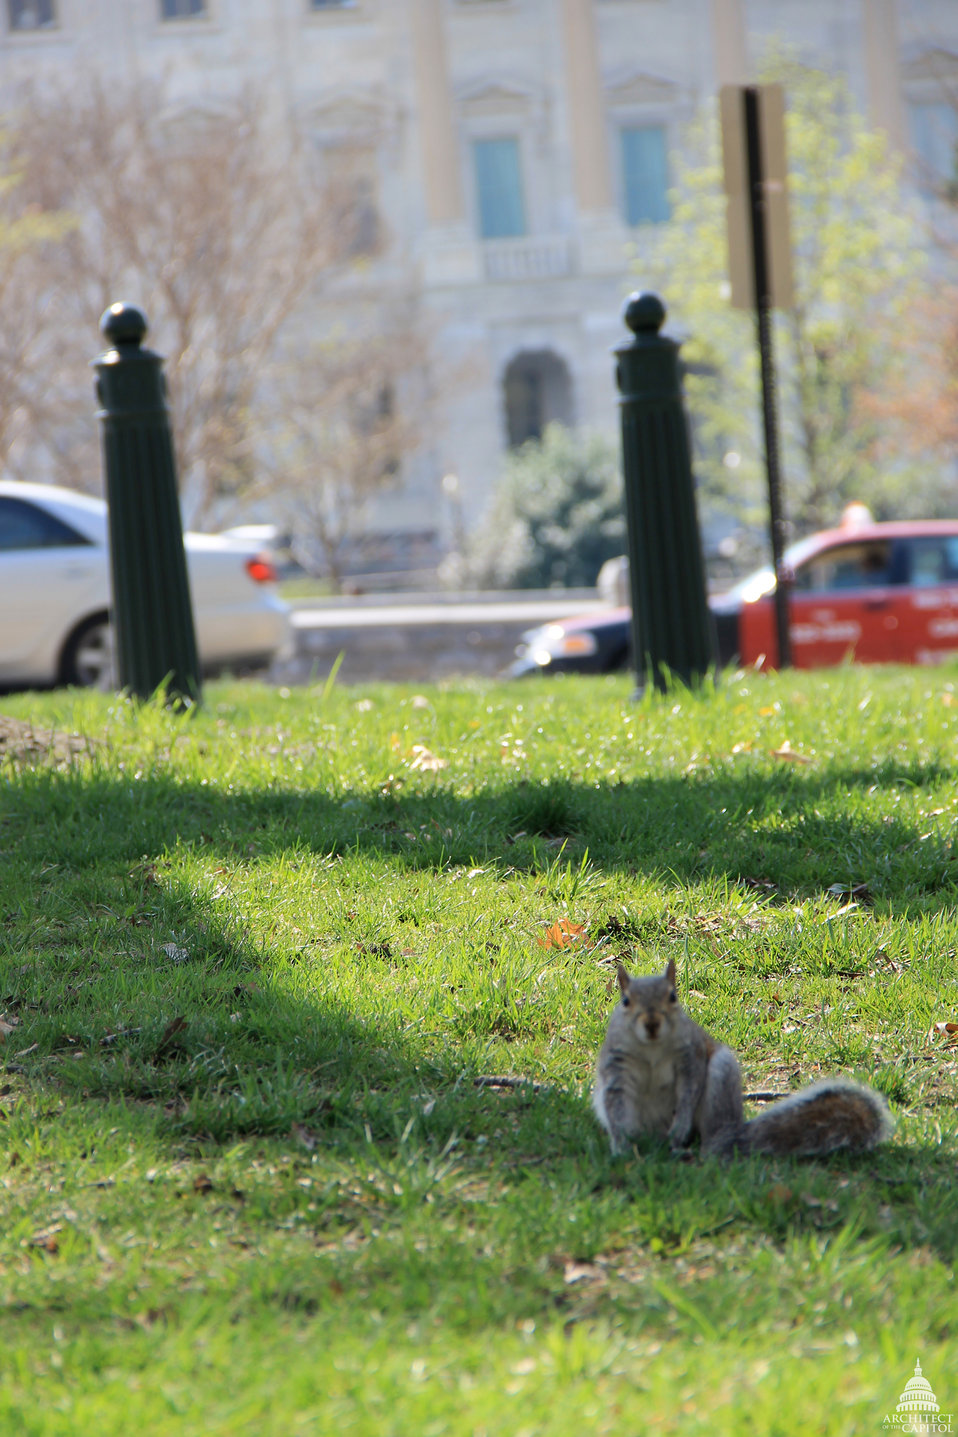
Squirrel in the Senate Parks